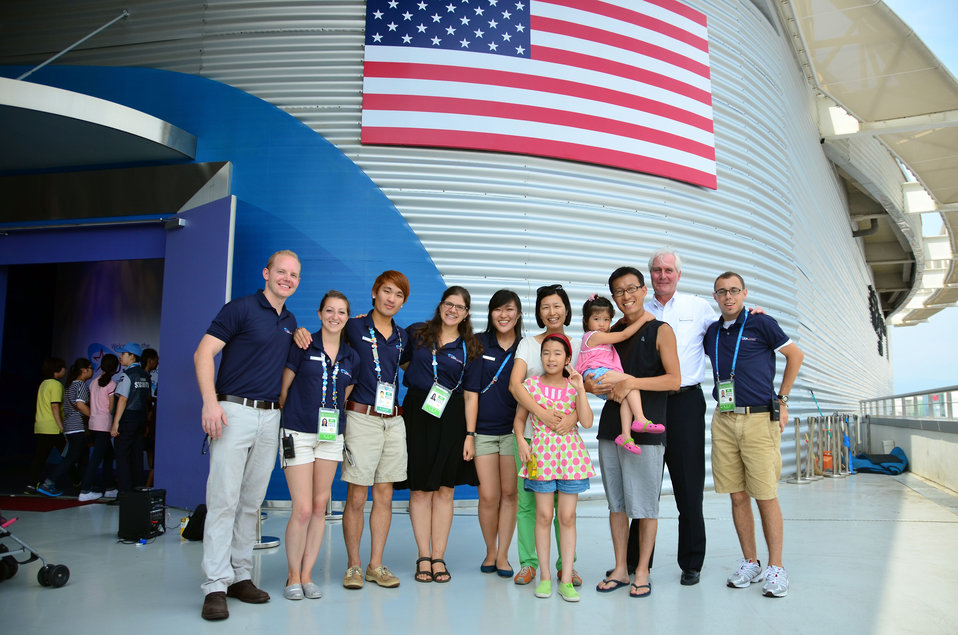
USA Pavilion at Yeosu Expo Student Ambassadors Welcome the Millionth Visitor

The USA Pavilion at Yeosu Expo Student Ambassadors welcome the pavilion’s one millionth visitor on August 9, 2012. [USA Pavilion at Yeosu Expo photo/ Public Domain]